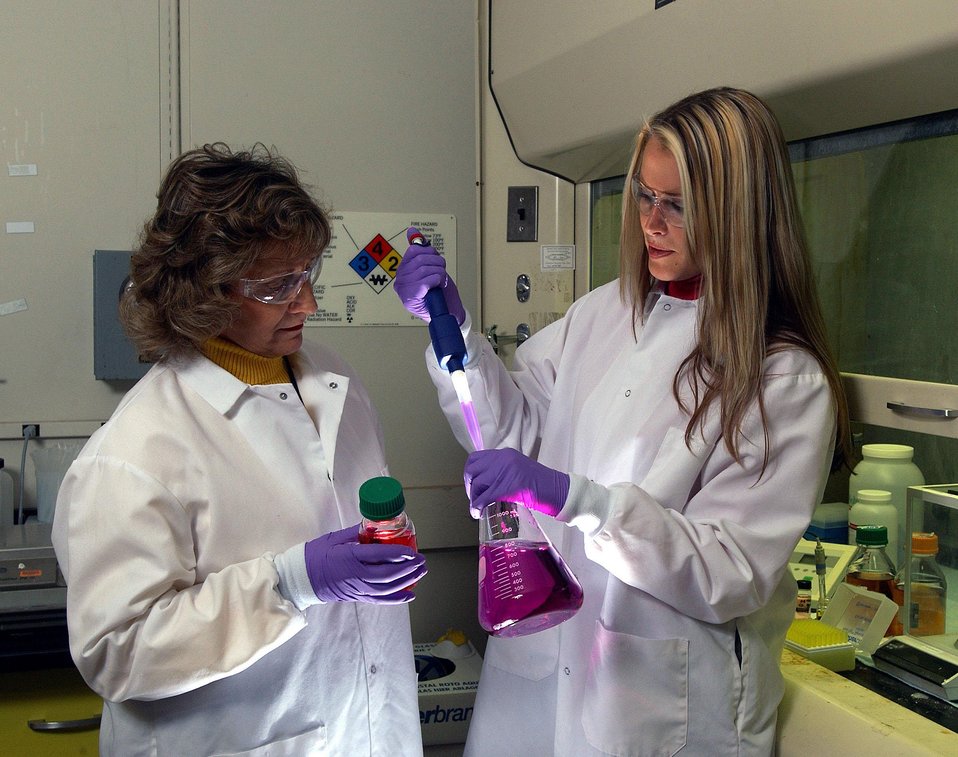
DECONTAMINATING FOAM DEVELOPED AT SANDIA NATIONAL LABORATORIES IS BEING TESTED IN COMBATING THE SARS VIRUS.

TWO RESEARCHERS OF THE SANDIA/KANSAS STATE UNIVERSITY RESEARCH TEAM ARE SHOWN INJECTING SANDIA'S DECONTAMINATION FOAM INTO A FLASK CONTAINING A SURROGATE OF THE SARS VIRUS. THE TEAM HAS DEMONSTRATED THAT CHEMICAL FORMULATIONS PREVIOUSLY DEVELOPED AT SANDIA TO DECONTAMINATE CHEMICAL AND BIOLOGICAL WARFARE AGENTS ARE LIKELY EFFECTIVE AT KILLING THE VIRUS THAT CAUSES SEVERE ACUTE RESPIRATORY SYNDROME (SARS).